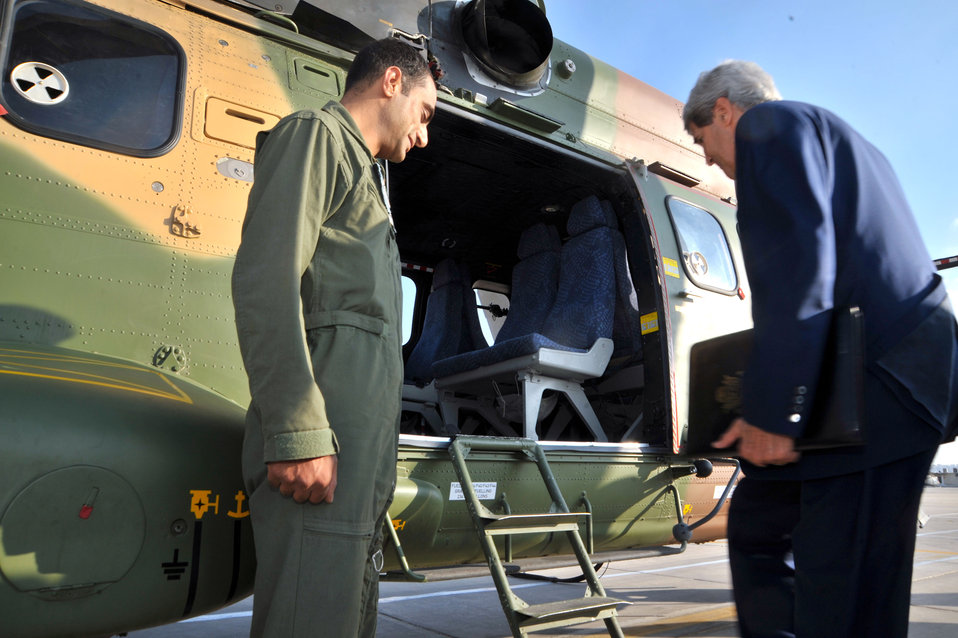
Secretary Kerry Boards the Helicopter

U.S. Secretary of State John Kerry boards a helicopter for the flight from Amman, Jordan, to Ramallah, West Bank, to meet with Palestinian Authority President Mahmoud Abbas on July 19, 2013.